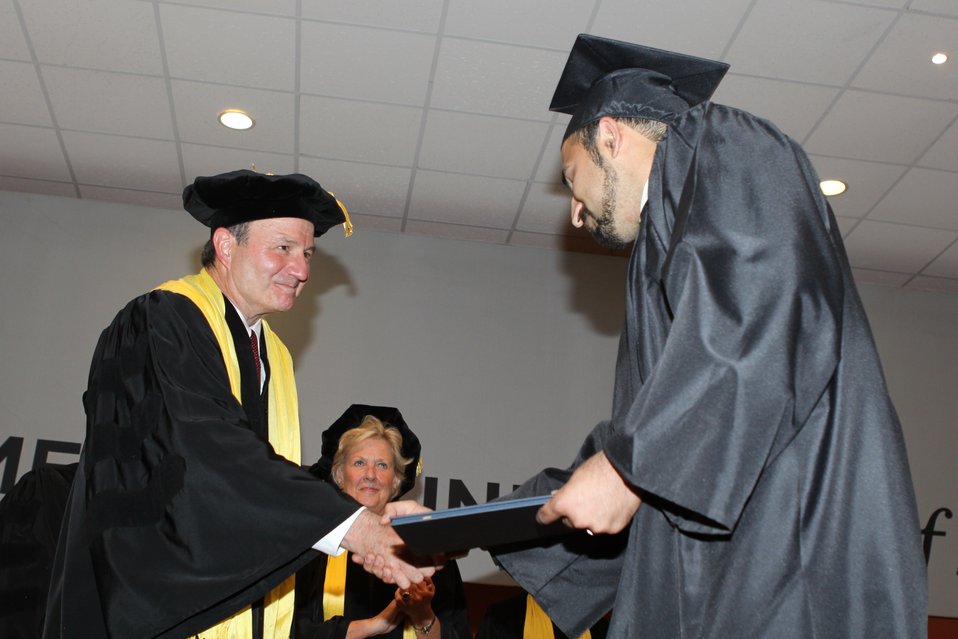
100526 AUAF Graduation 280